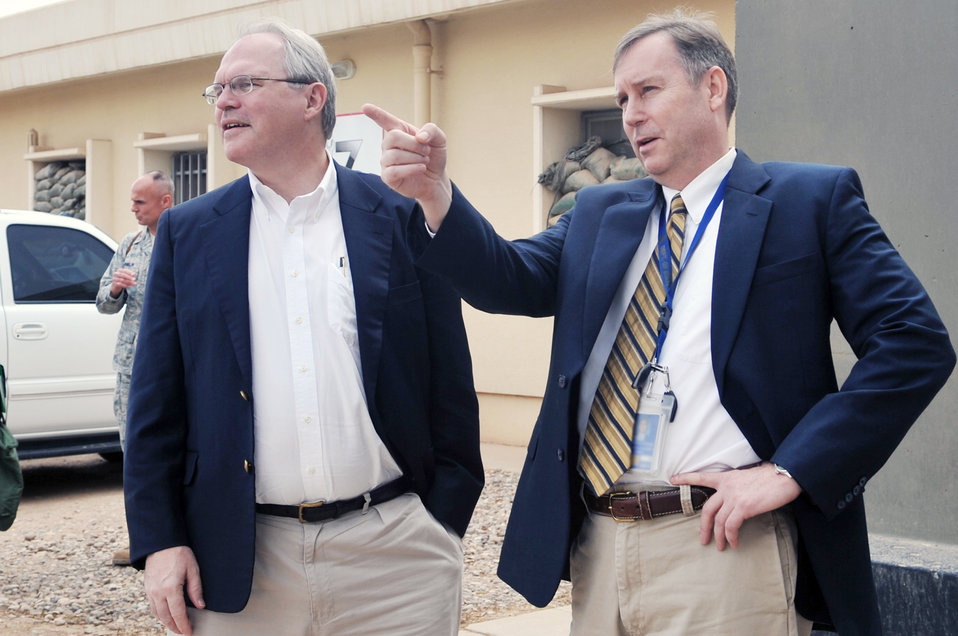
leadership visit

Ben Fluhart greets the U.S. Ambassador to Iraq Christopher Hill, during the ambassador's visit to the provincial reconstruction team April 23, 2010, at Joint Base Balad, Iraq. Mr. Fluhart is the Balad Provincial Reconstruction Team leader.